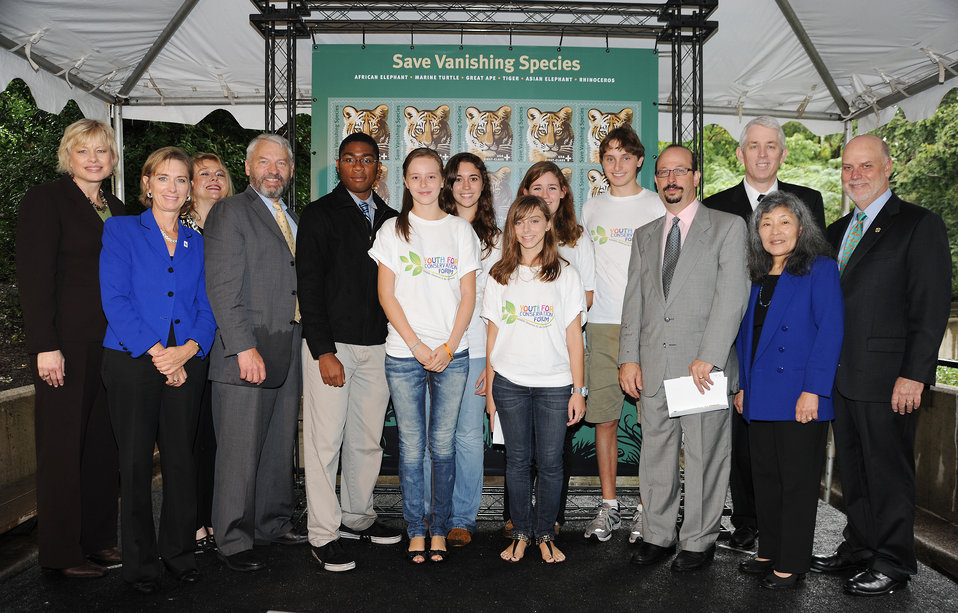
Save Vanishing Species Stamp First Day of Issue